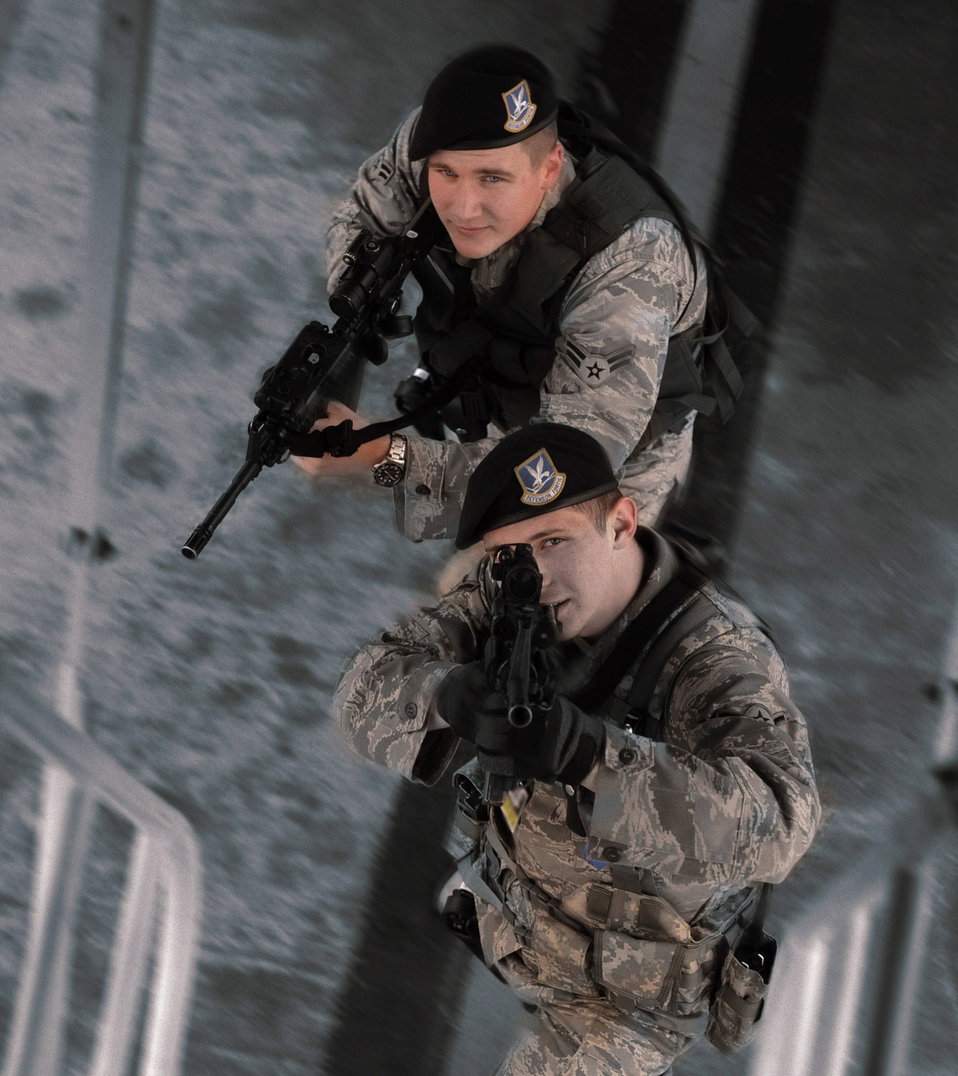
Don't move!

Airman Bradley Harris (foreground) and Airman 1st Class Clinton Warner prepare to enter an aircraft during an anti-hijacking exercise at Ellsworth Air Force Base, S.D. They are 28th Security Forces Squadron members.